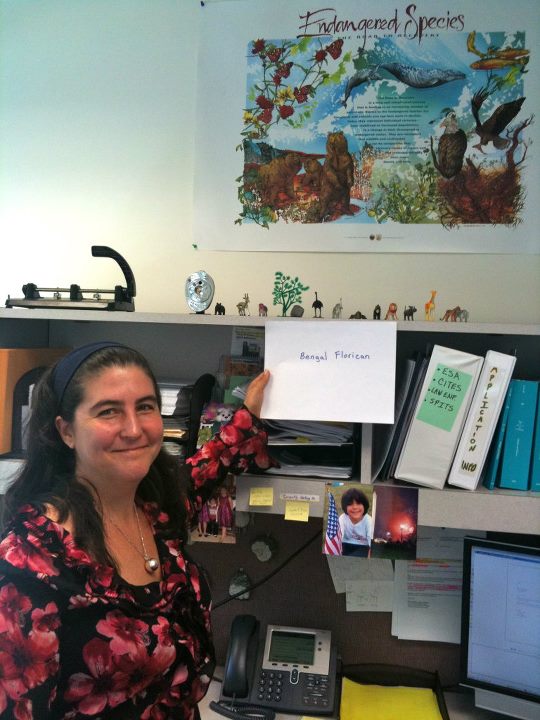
Darcy Vargas, 'Bengal Florican,'

International Affairs participates in FFI's In Our Hands campaign